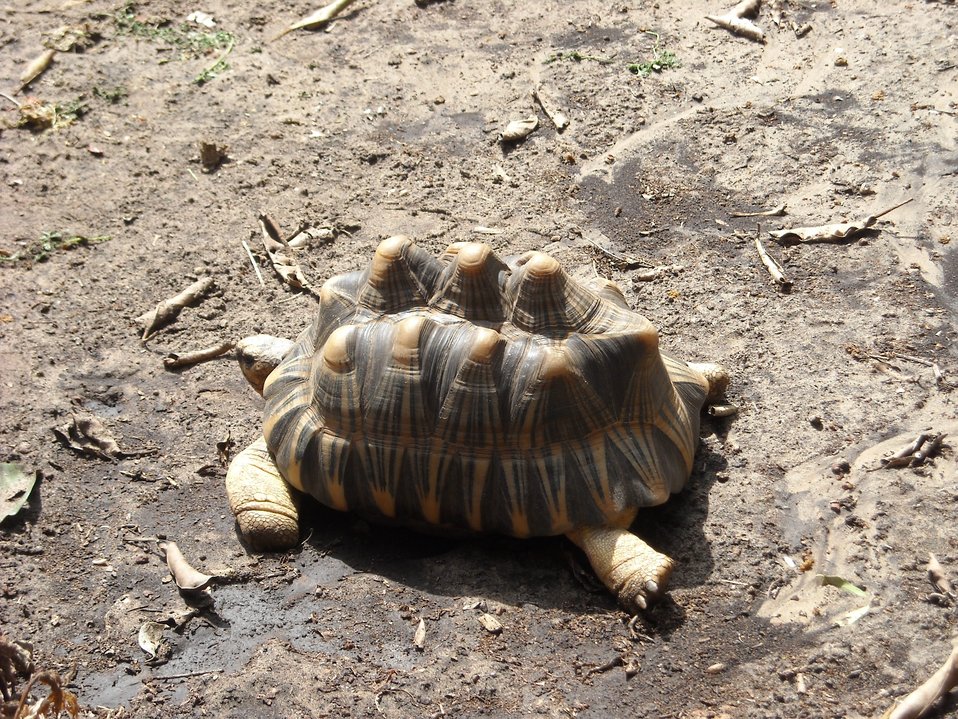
A sulcata tortoise (Geochelone sulcata) , a land-dwelling reptile native to Northern Africa.